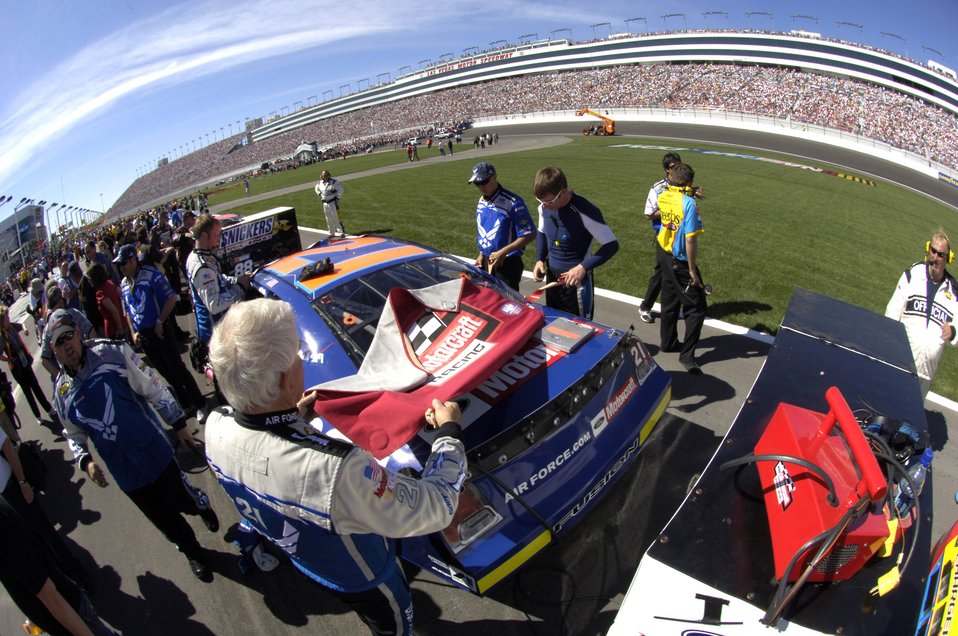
NASCAR Nextel Cup UAW Daimler-Chrysler

Crew members from the Air Force #21 car, driven by Jon Wood, make final car preparations March 11 at Las Vegas Motor Speedway before the start of the NASCAR Nextel Cup UAW Daimler-Chrysler 400.